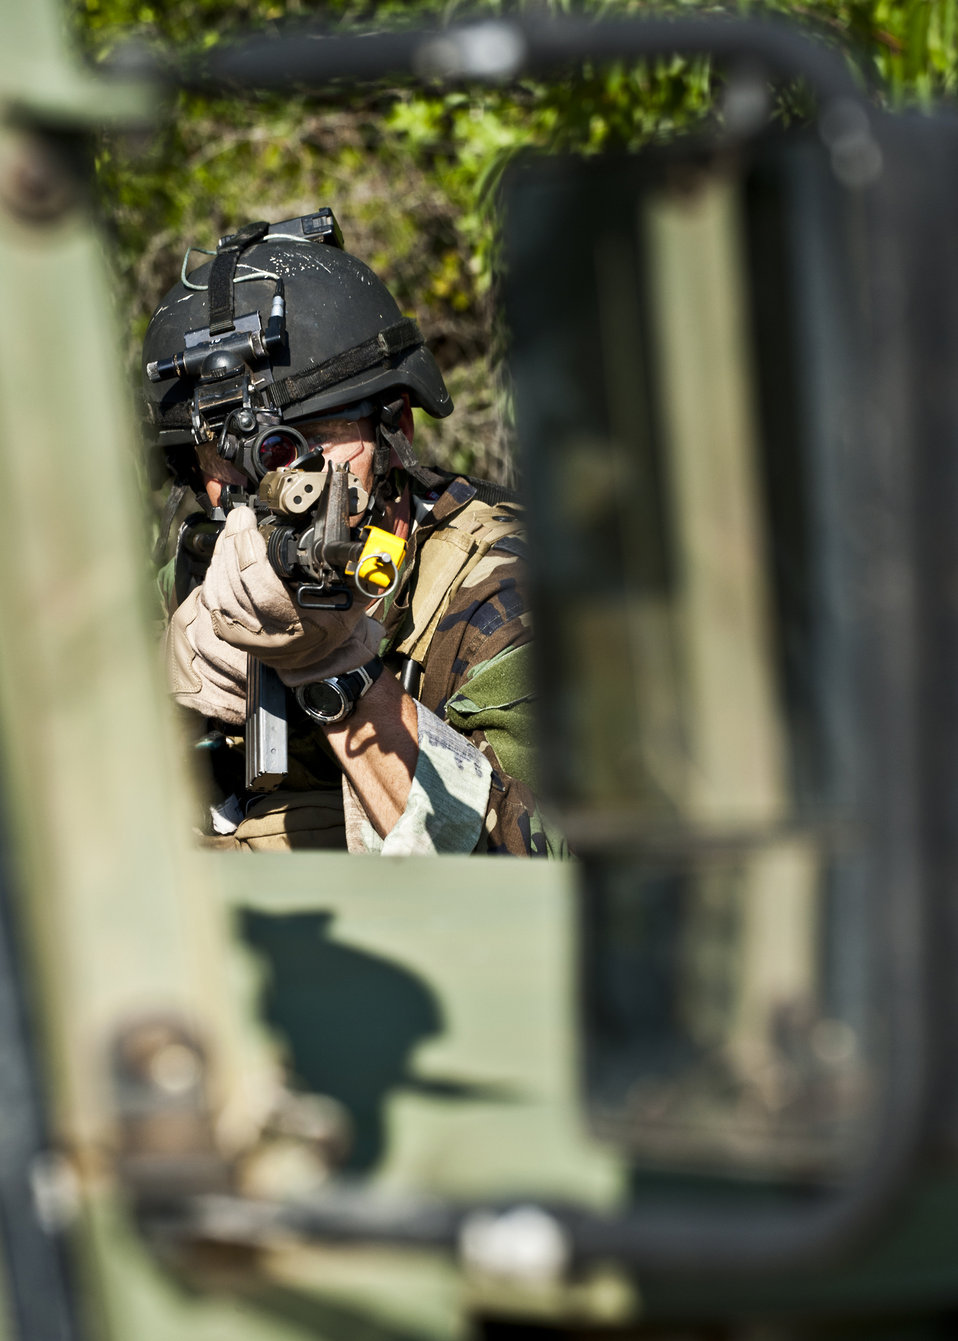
Closing in

Maj. Michael Black aims his weapon downrange after his team members heard sounds of a